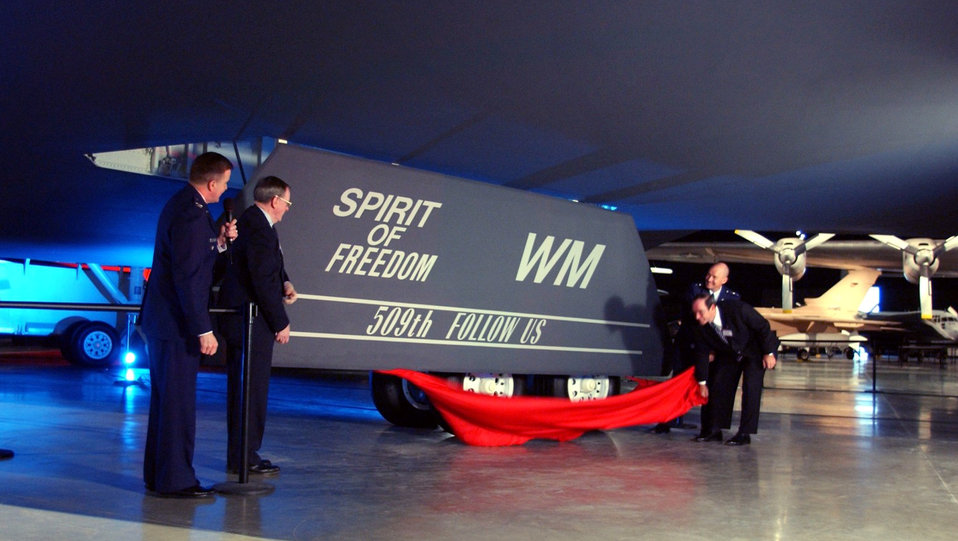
'Spirit of Freedom'

WRIGHT-PATTERSON AIR FORCE BASE, Ohio -- U.S. Air Force Museum officials formally unveil the